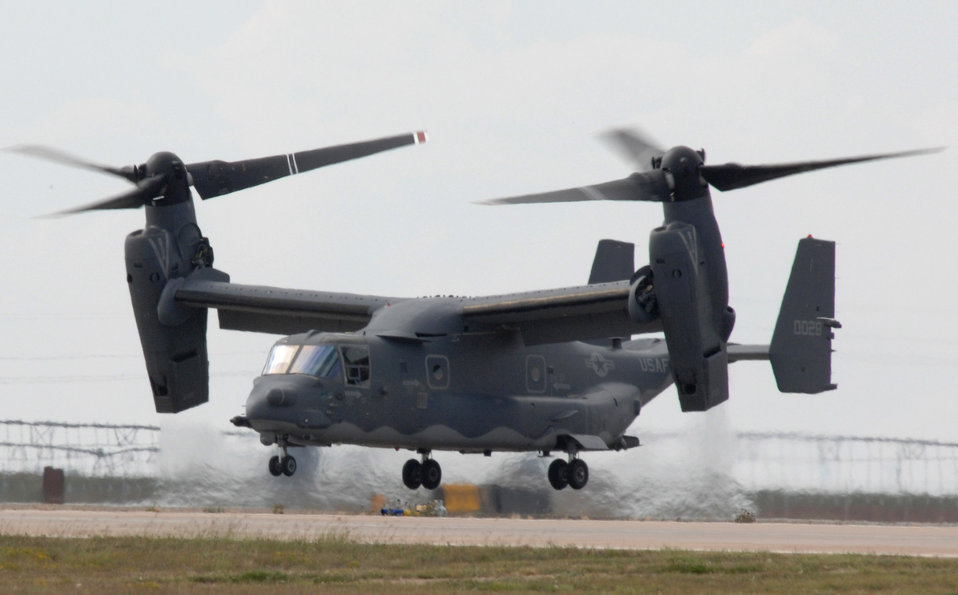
New chapter for Air Force Special Operations begins

A CV-22 Osprey takes off Sept. 29 from Cannon Air Force Base, N.M. Officials from the Air Force Special Operations Command assumed command of Cannon in a redesignation and change-of-command ceremony Oct. 1.